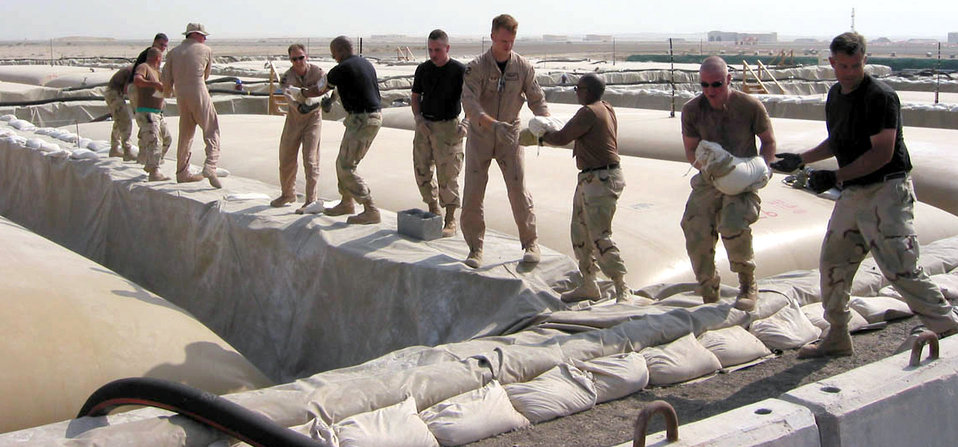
In the bag

OPERATION ENDURING FREEDOM (AFPN) -- Airmen from the 380th Expeditionary Logistics Readiness Squadron's petroleum, oil and lubricants section, plus volunteers from the 380th Air Expeditionary Wing, hand sandbags down the line. The sandbags will secure liners as part of the ongoing fuel farm expansion project at a forward-deployed location.